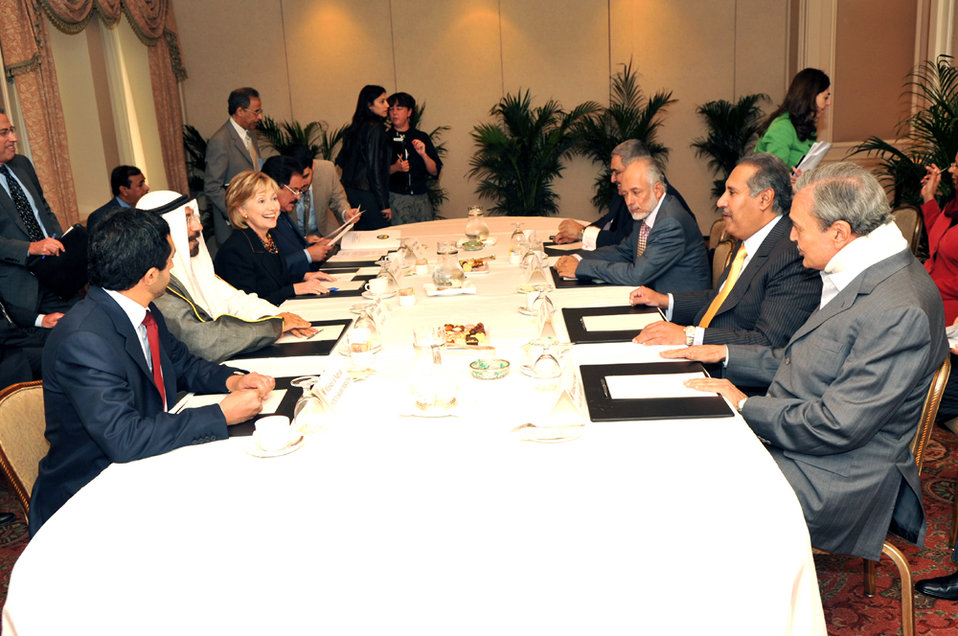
UNGA 2009: Secretary Clinton Meets With Gulf Cooperation Council

U.S. Secretary of State Hillary Rodham Clinton meets with members of the Gulf Cooperation Council at the Waldorf Astoria hotel in New York City, New York September 26, 2009.